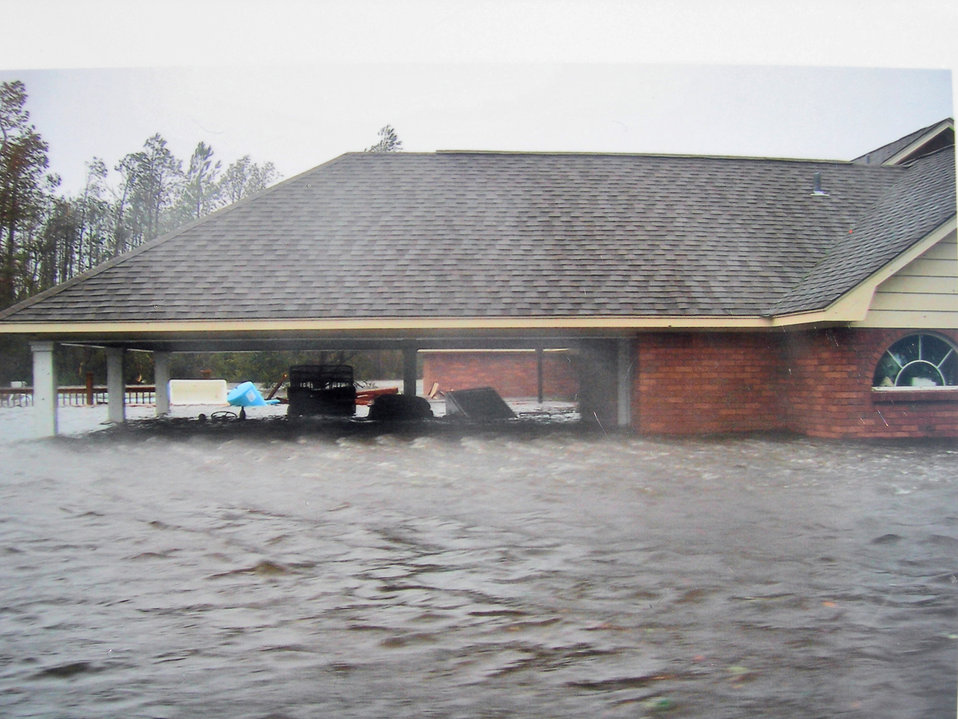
Engineers help clean up

BILOXI, Miss. -- After Hurricane Katrina ravaged the area, Stanley Morgan's home was flooded. Once the water receded, civil engineers who were deployed to nearby Keesler Air Force Base from Luke AFB, Ariz., helped the Morgans clean up the wreckage the hurricane left behind.